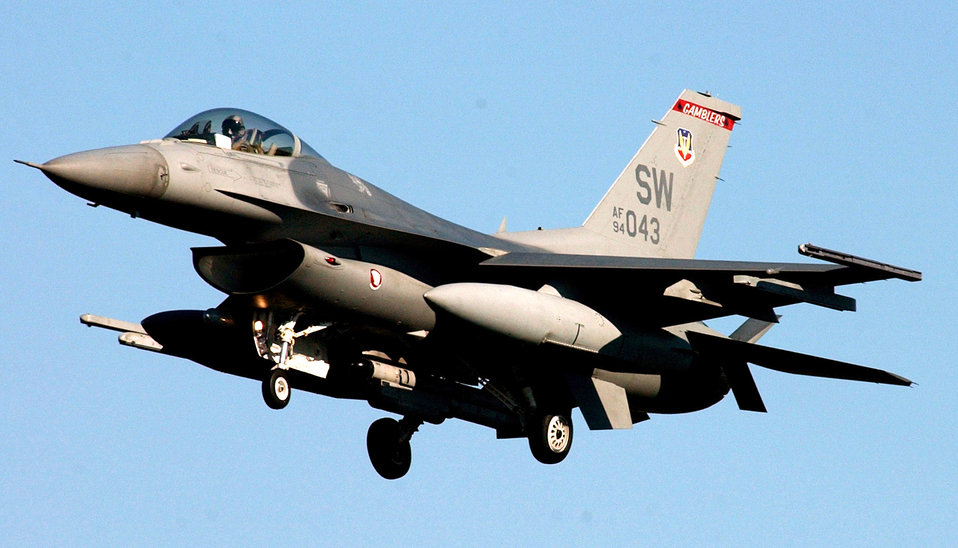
Sea Lion 04-02

SHAW AIR FORCE BASE, S.C. -- An F-16 Fighting Falcon from the 77th Fighter Squadron here returns to base after completing a mission during exercise Sea Lion 04-02 on Oct. 30. Sea Lion 04-02 is an operational readiness exercise being conducted here.